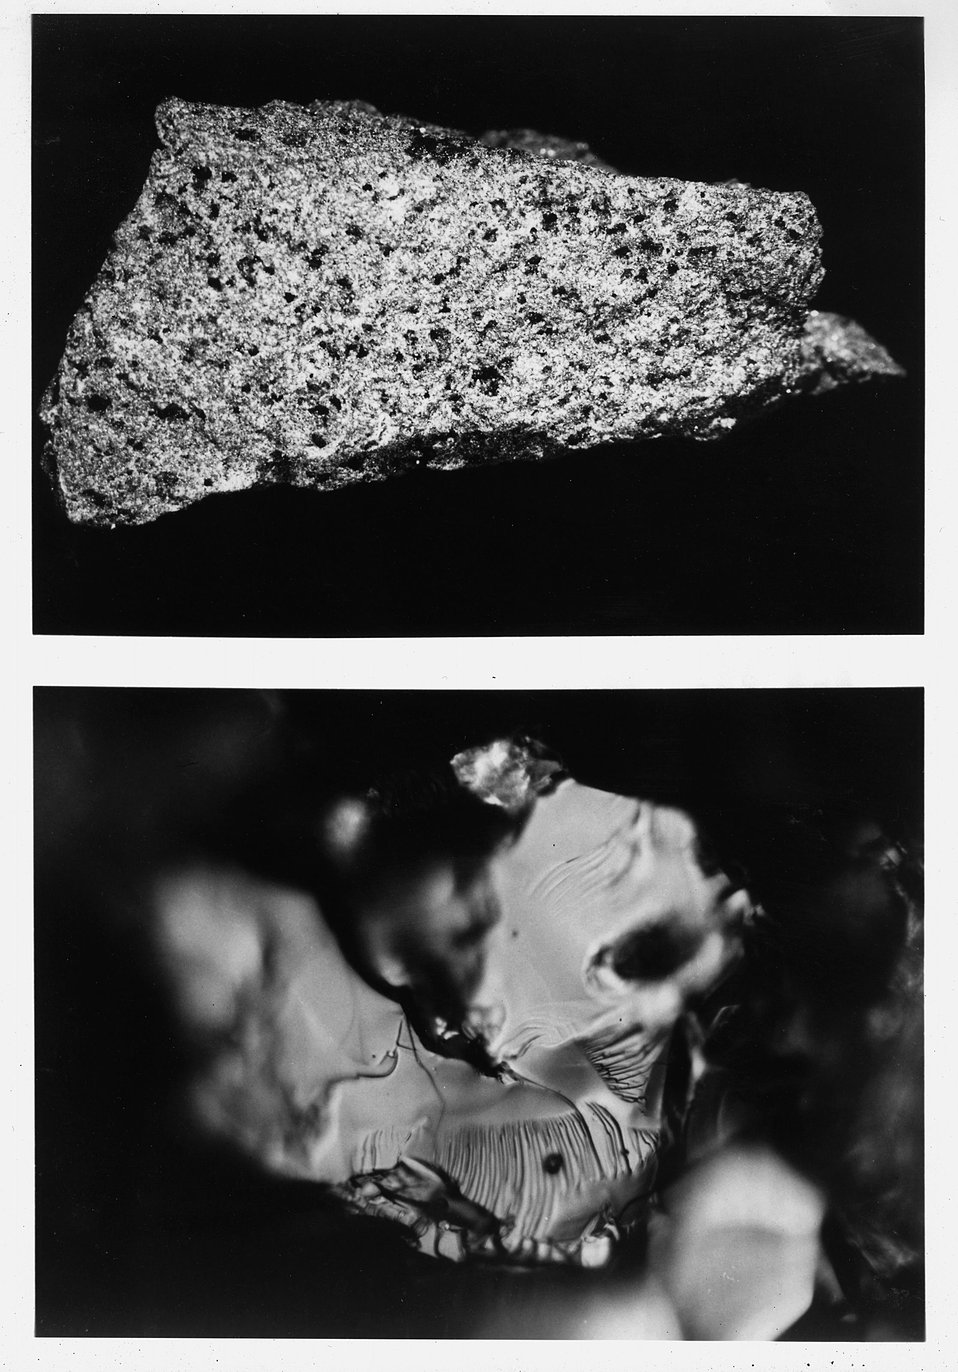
12-GRAM PIECE OF MOON SENT TO BROOKHAVEN NATIONAL LABORATORY
FOR EVALUATION under a NASA agreement.